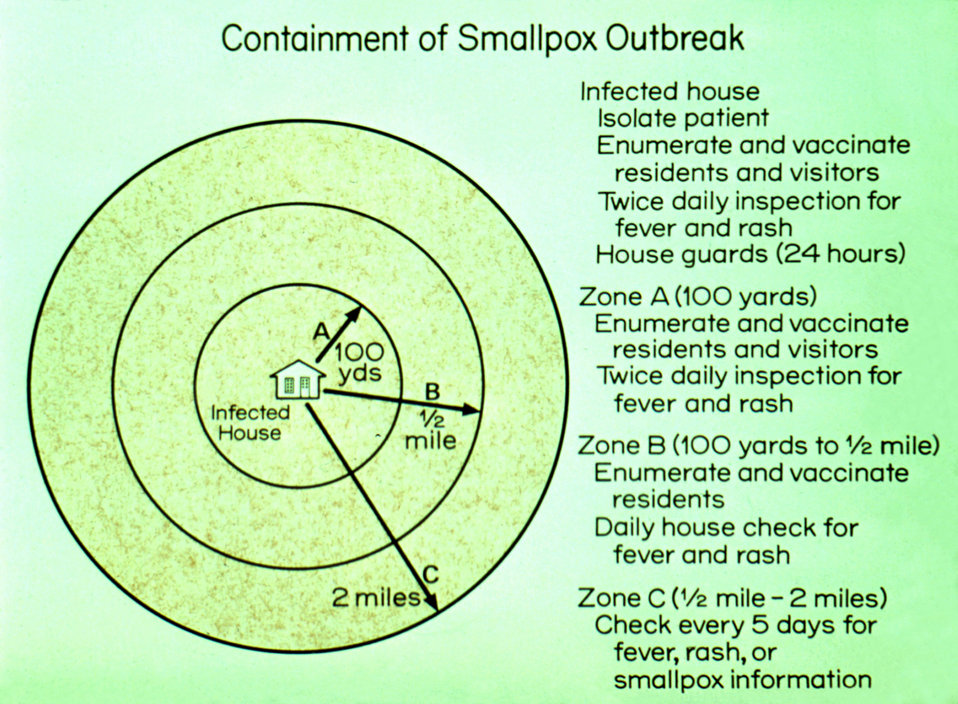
This diagram depicts how the science of epidemiology was put into practice by the health workers who participated in the 1970s smallpox eradication efforts in Bangladesh and elsewhere.